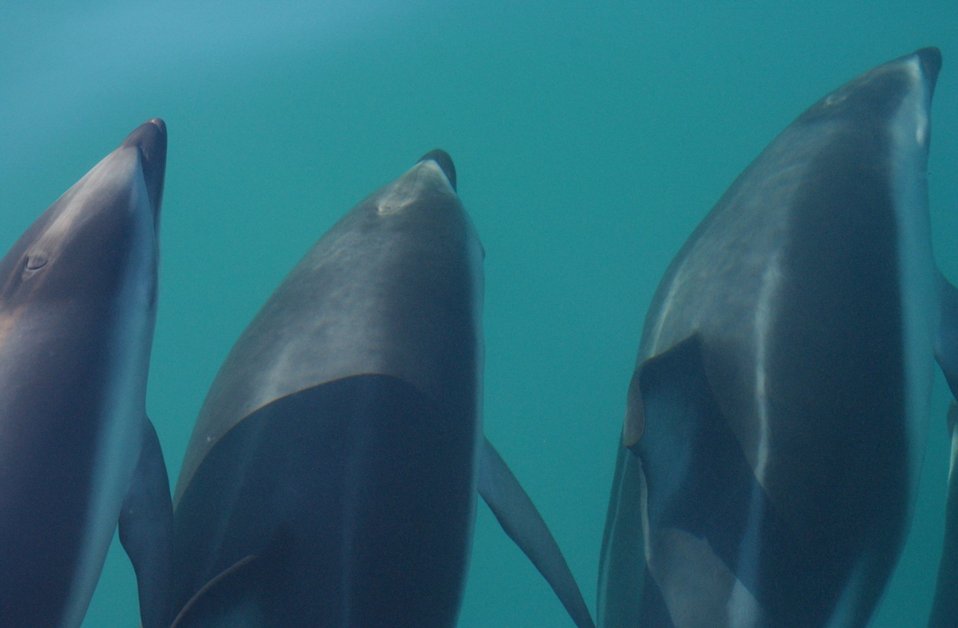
Dusky dolphin (Lagenorhynchus obscurus)